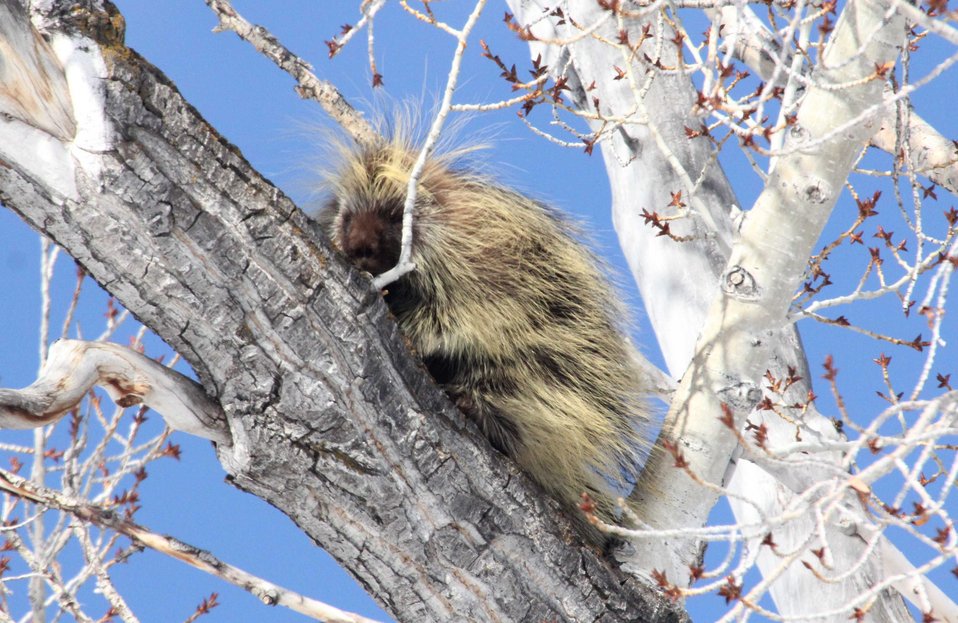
An Overhead Hazard

The prickliest of rodents, porcupines are good climbers and spend much of their time in trees. This porcupine spent the better part of a day in a tree near the McBride Management Area of the National Elk Refuge.

Credit: USFWS / Tony Hough, National Elk Refuge volunteer